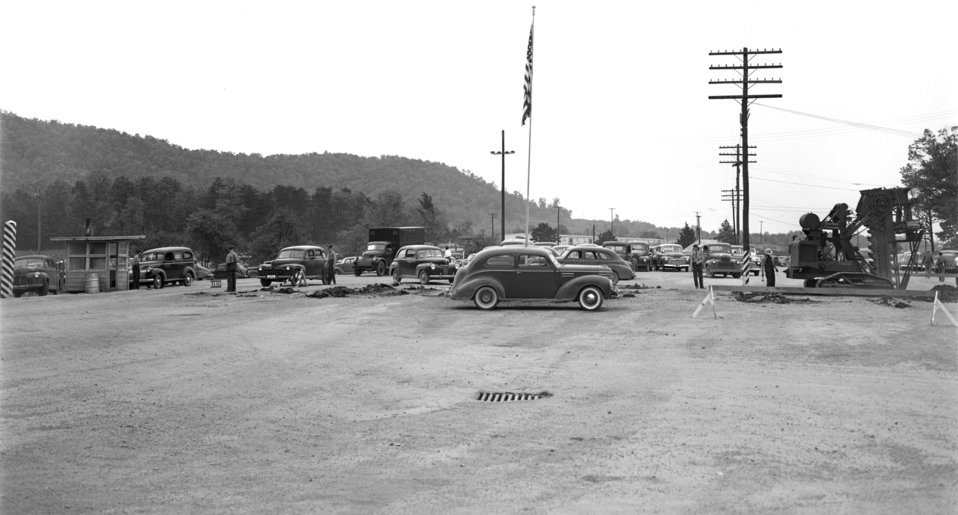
Elza Gate Removal Oak Ridge 1947

3455-1422 DOE photo Ed Westcott 5-12-1947 Oak Ridge Tennessee